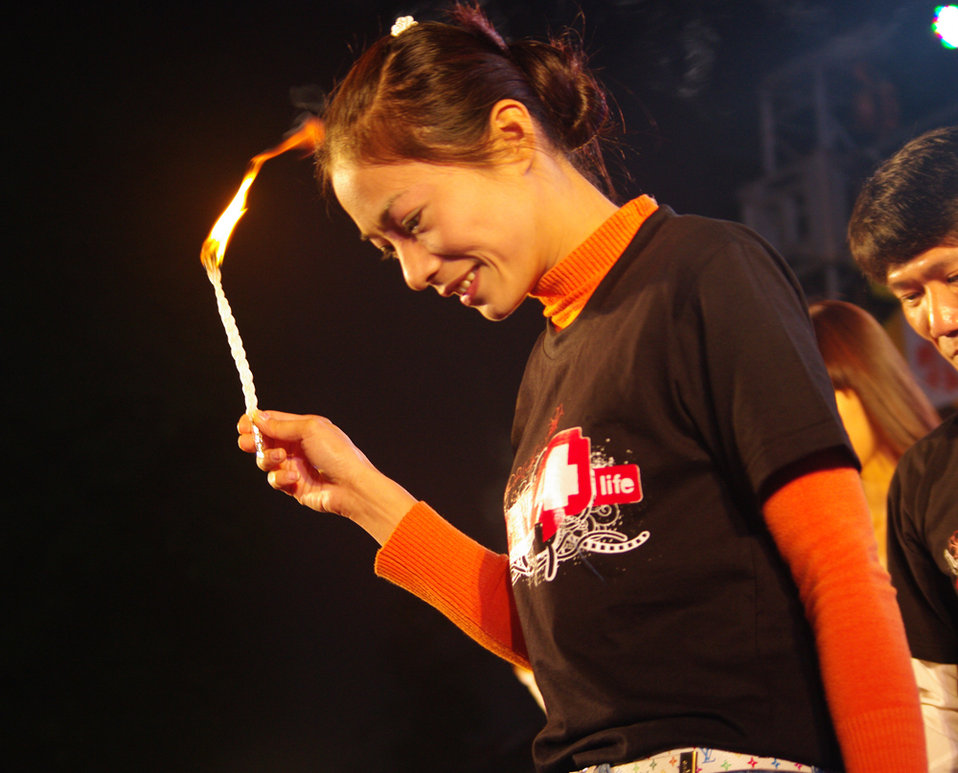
USAID supports dance4life to raise awareness of HIV and fight stigma in Vietnam

Tran Thi Hue, winner of the PEPFAR and USAID supported Charming Plus pageant in Hanoi, joins in a gesture at the dance4life event by lighting and burning the word 'stigma'.